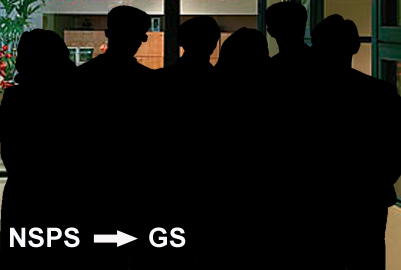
NSPS conversion to GS